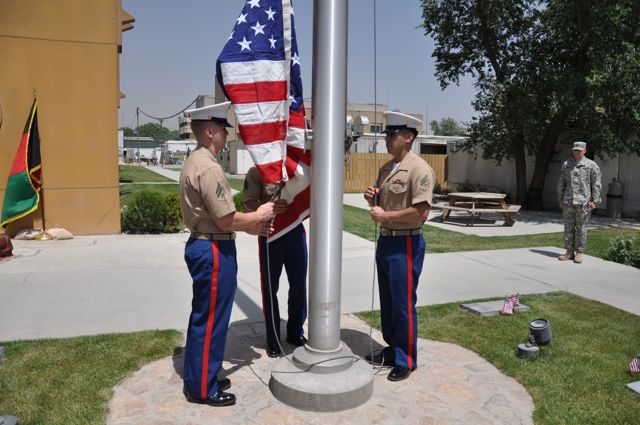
Memorial Day at US Embassy in Kabul